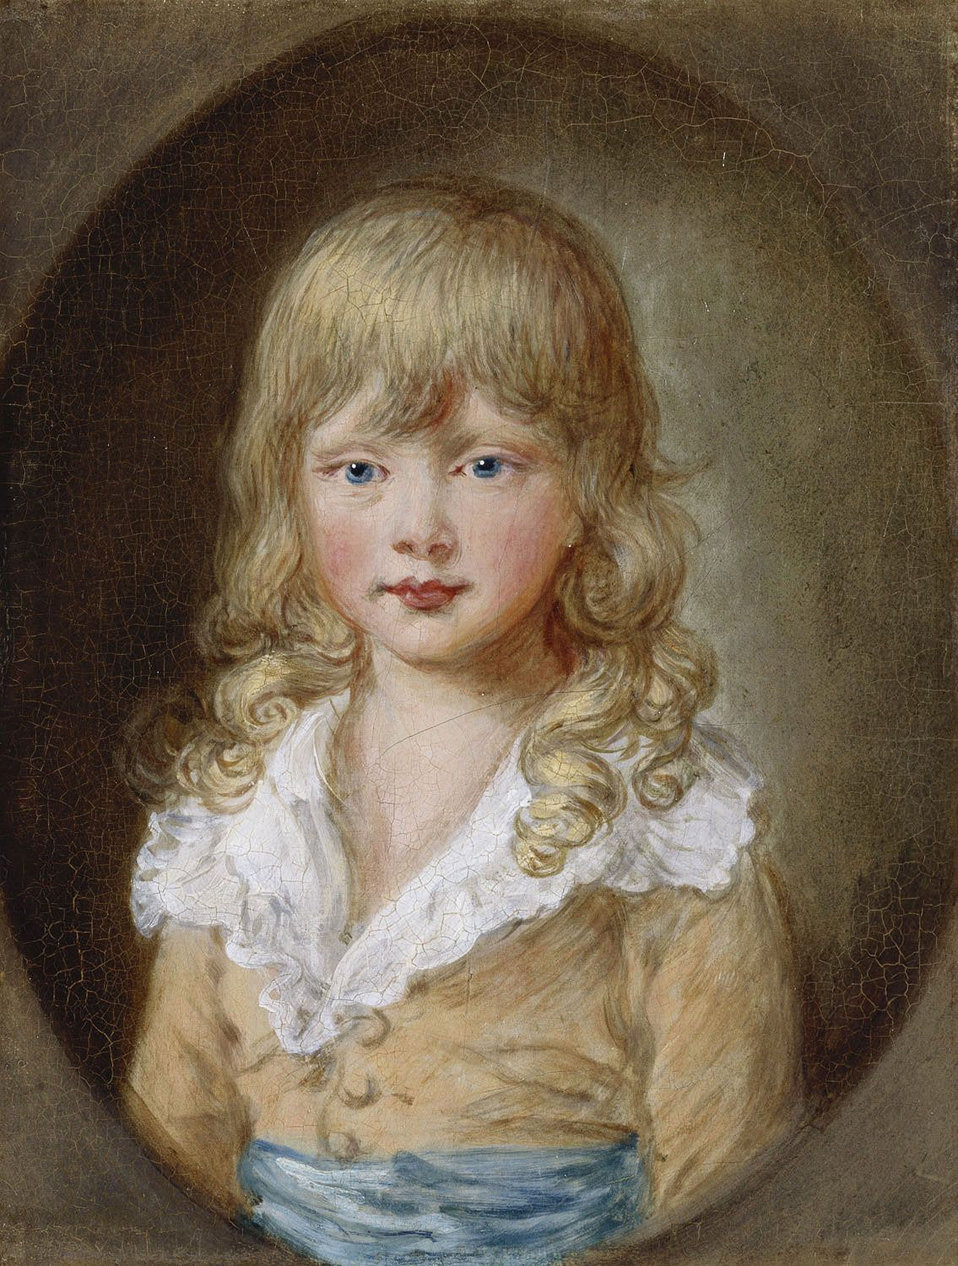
Octavius of Great Britain - after Gainsborough 1782-84